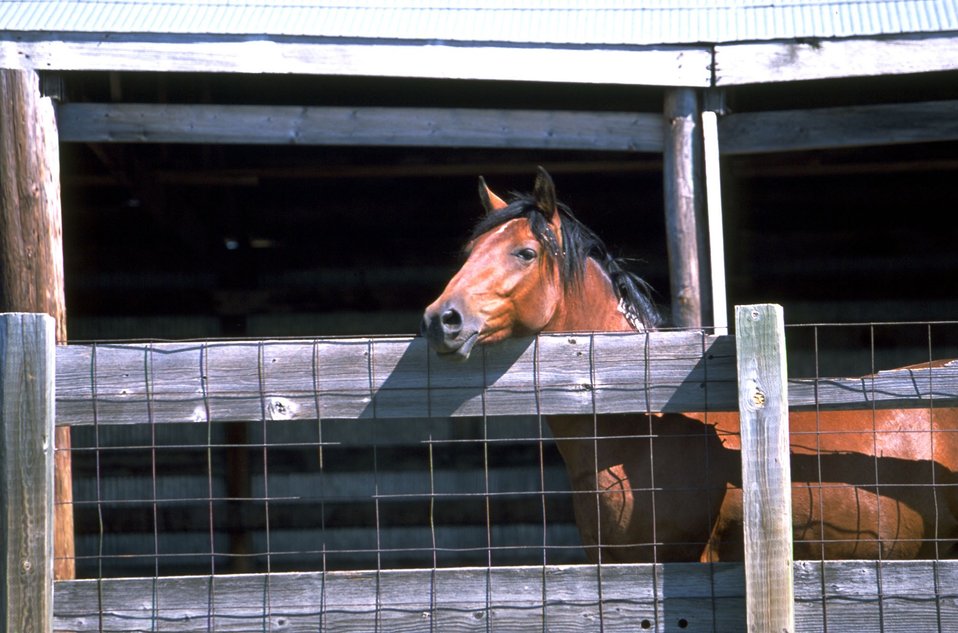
Adopted Horse looking out of Pen